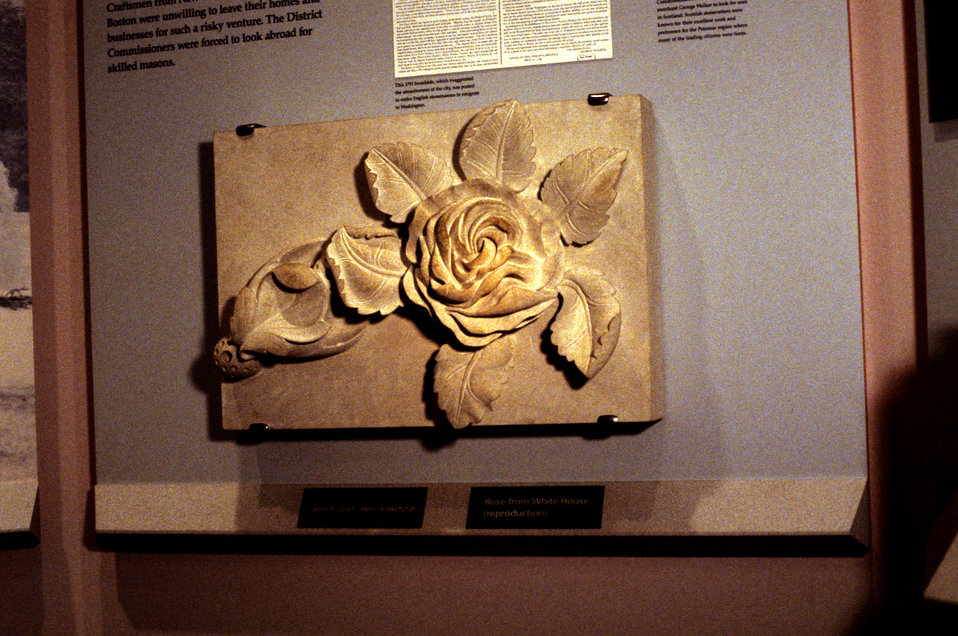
This was the eigth in a series of eight images (PHIL# 9088 - 9095) revealing the exhibits inside the U.S. National Building Museum, all of which could be touched by all visitors, including adults, children, and especially those who were mobility, or visually impaired. Consideration paid to those with such impairments during the designing of this facility, enhanced the enjoyment experienced by all participants, as well as their overall learning experience. Mounted so standing, or seated users could fully appreciate their visit, the exhibits included Braille descriptions, large print signs. Depicted in this image was a sculptural replica of a piece entitled, 'A rose from the White House'. 'The Center for Universal Design (CUD) is a national research, information, and technical assistance center that evaluates, develops, and promotes accessible and universal design in housing, buildings, outdoor and urban settings and related products.'